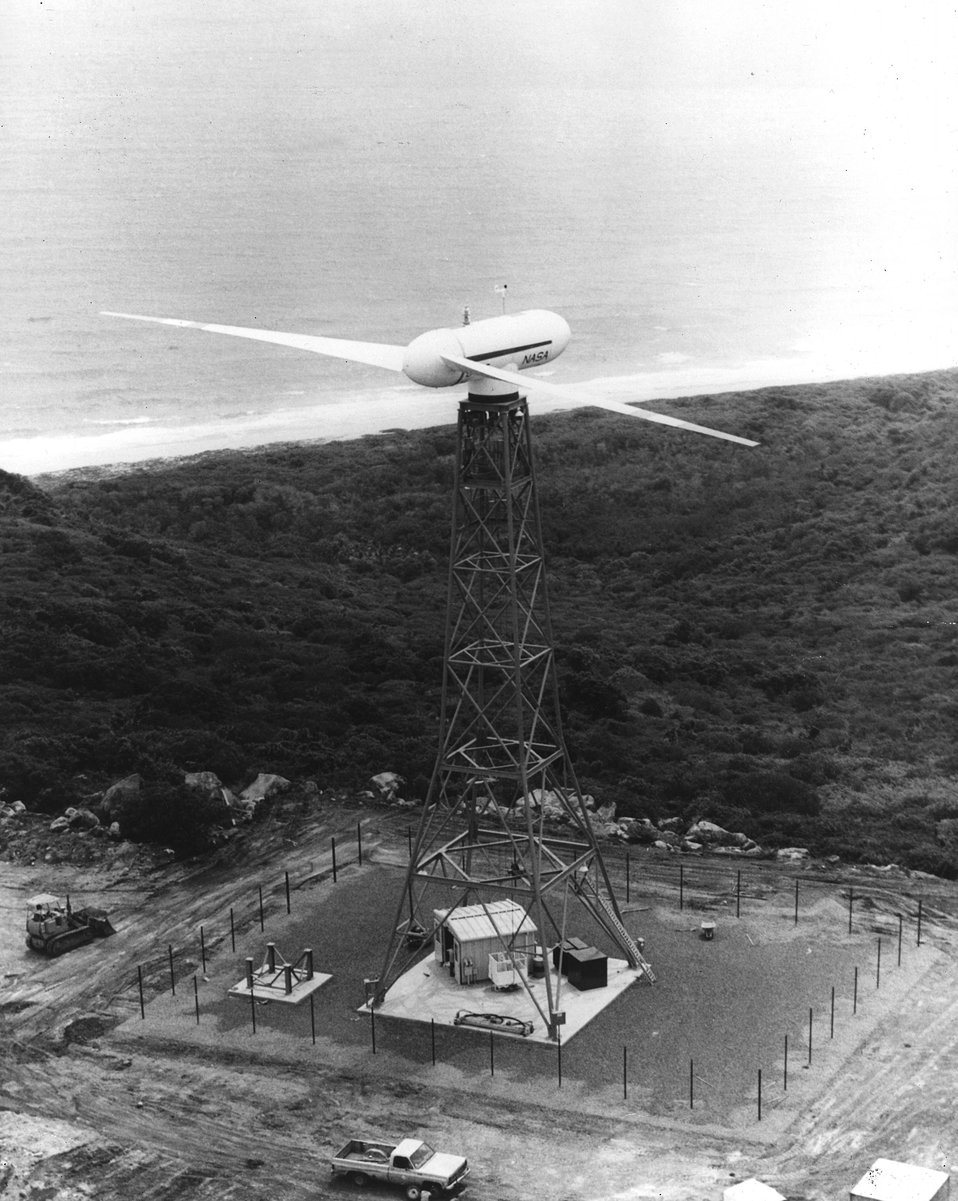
A large modern wind turbine generator is being field tested on Culebera Island, Puerto Rico for the Department of Energy and the National Aeronautics and Space Administration. c. 1978